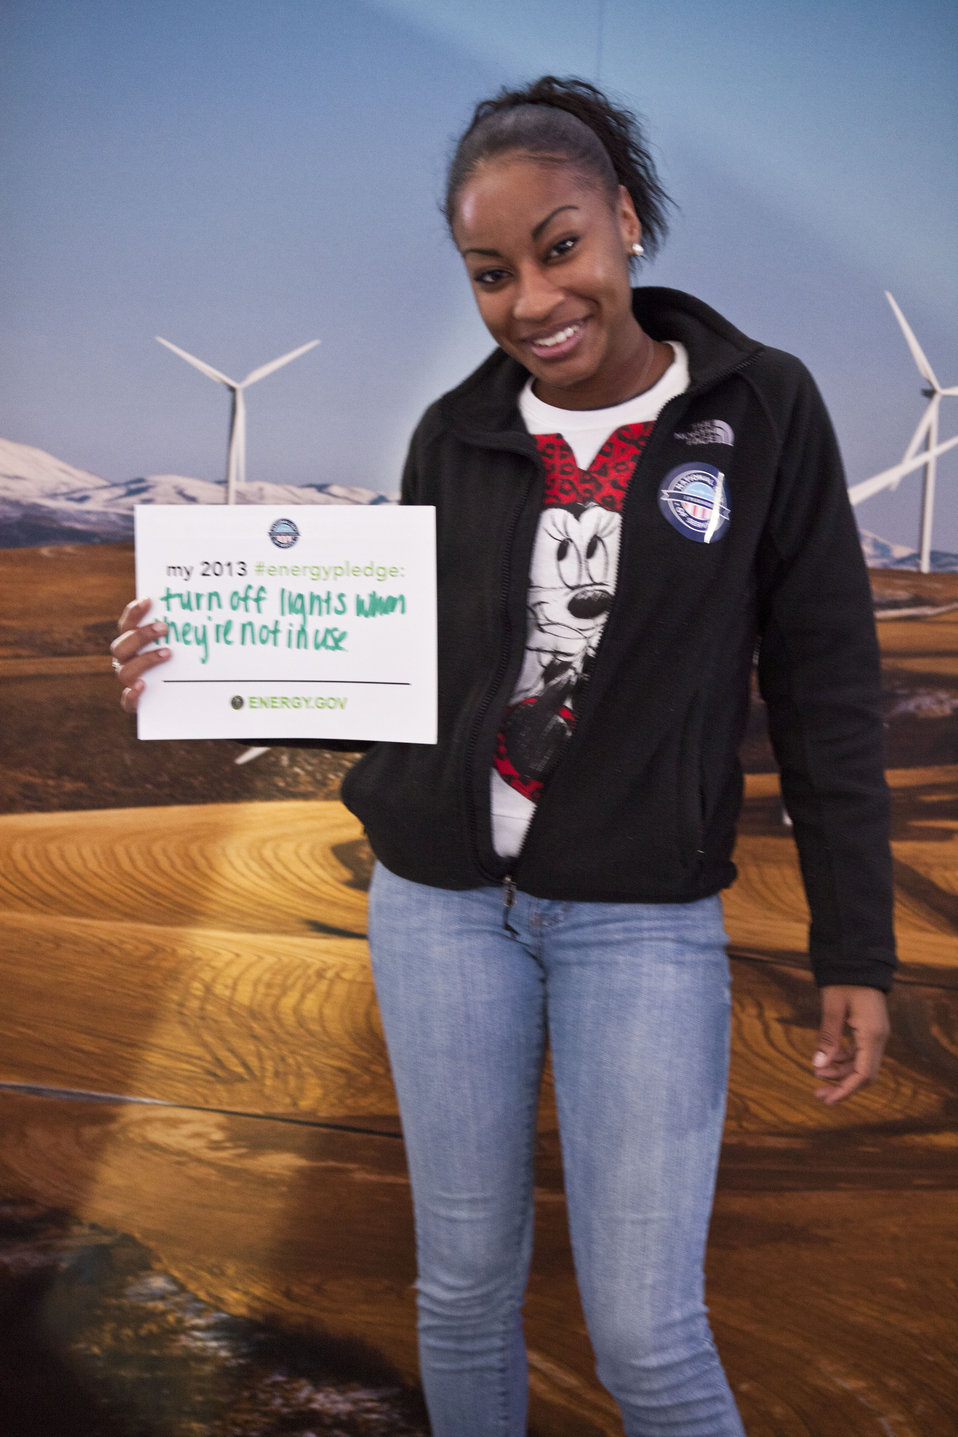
What's your #energypledge?